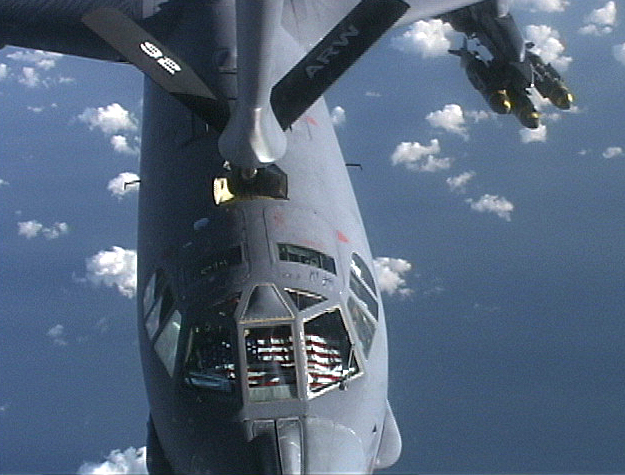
The Buff refuels

OPERATION IRAQI FREEDOM -- A KC-135 Stratotanker, 28th Expeditionary Air Refueling Squadron, refuels a B-52 Stratofortress bomber, 40th Air Expeditionary Wing, during A-day. The B-52 took part in the